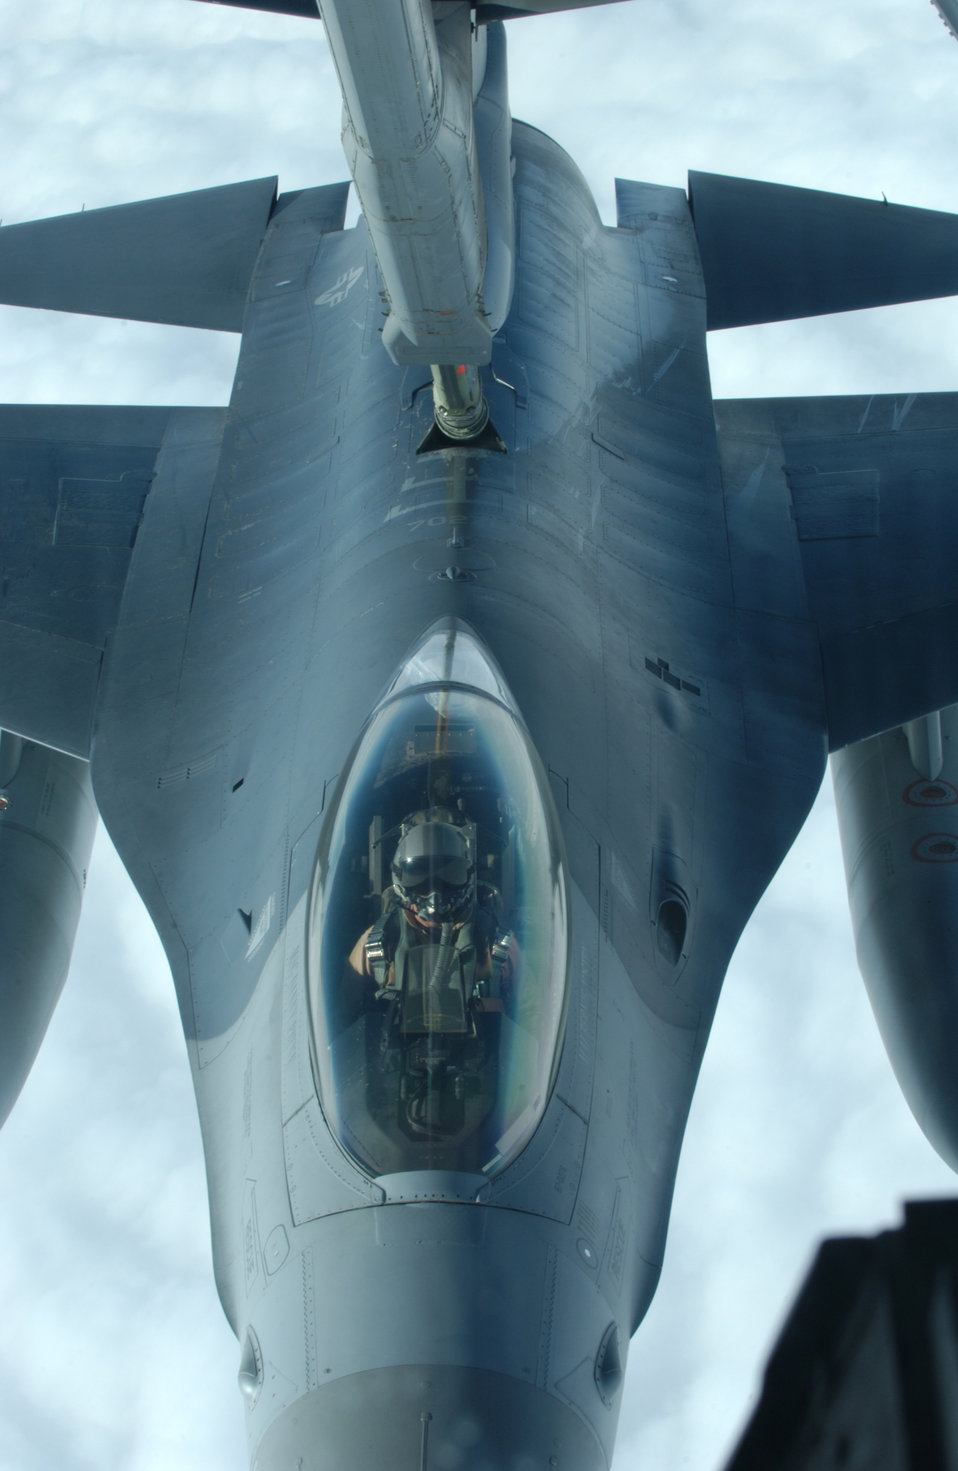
Christmas refuel

OVER IRAQ -- An F-16 Fighting Falcon receives fuel from a KC-10A Extender during a combat patrol Dec. 25. The tanker is assigned to the 908th Expeditionary Aerial Refueling Squadron.